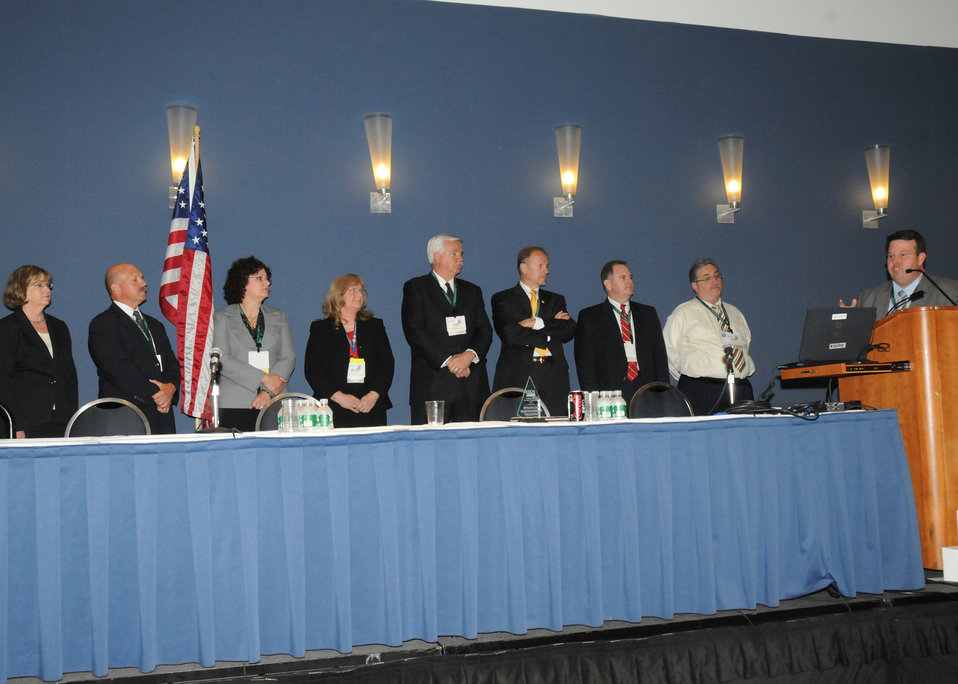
Agriculture Department Chief Financial Officers and Budget Directors make up an impromptu panel to answer audience questions. (L to R Marketing and Regulatory Programs Chief Financial Officer Laura MacKensie, Research, Education and Economics Chief Financial Officer Steve Helmrich, Risk Management Agency Chief Financial Officer Margo Erny, Office of Inspector General Chief Financial Officer Kathy Hammer, Rural Development Chief Financial Officer Van Jorstad, Food Nutrition Service Chief Financial Officer Steve Butler, Foreign Agricultural Service Budget Director Scott Redman, Natural Resource Conservation Service Chief Financial Officer Joseph Noselli, and Agriculture Acting Chief Financial Officer John Holladay). The event took place at the Financial Management Training Conference held in Washington, D. C., on May 26, 2010. USDA photo 10di1371-77.